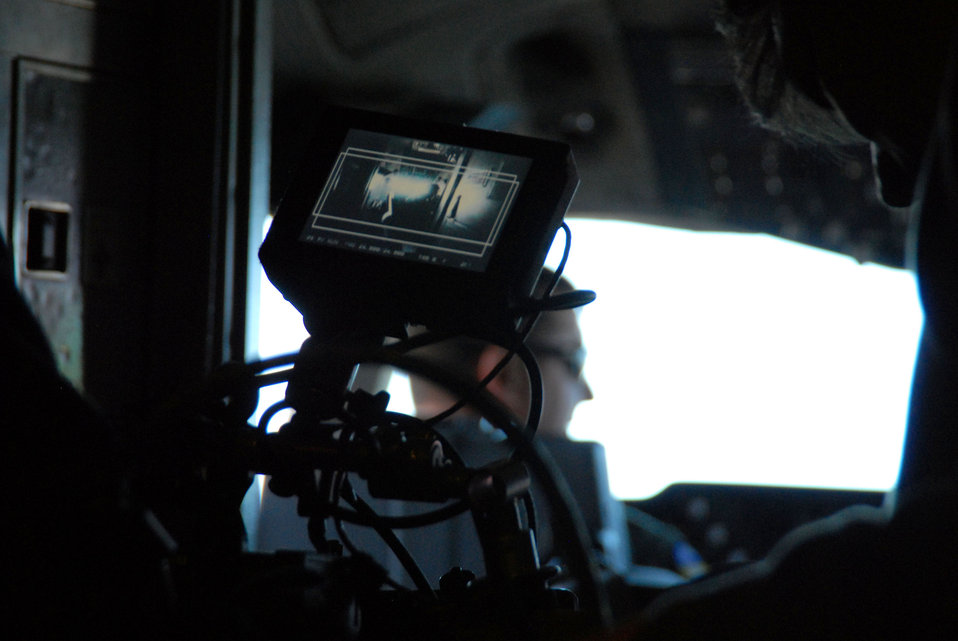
Edwards, Travis Airmen 'Do something amazing'

A film crew aboard a KC-10 Extender films Maj. Ian Larive fly Feb. 7 over Edwards Air Force Base, Calif. Film crews were at Edwards AFB Feb. 6 to 8 to film one of three new Air Force commercials set to debut later this year. Major Larive is a KC-10 aircraft commander from Travis AFB, Calif.